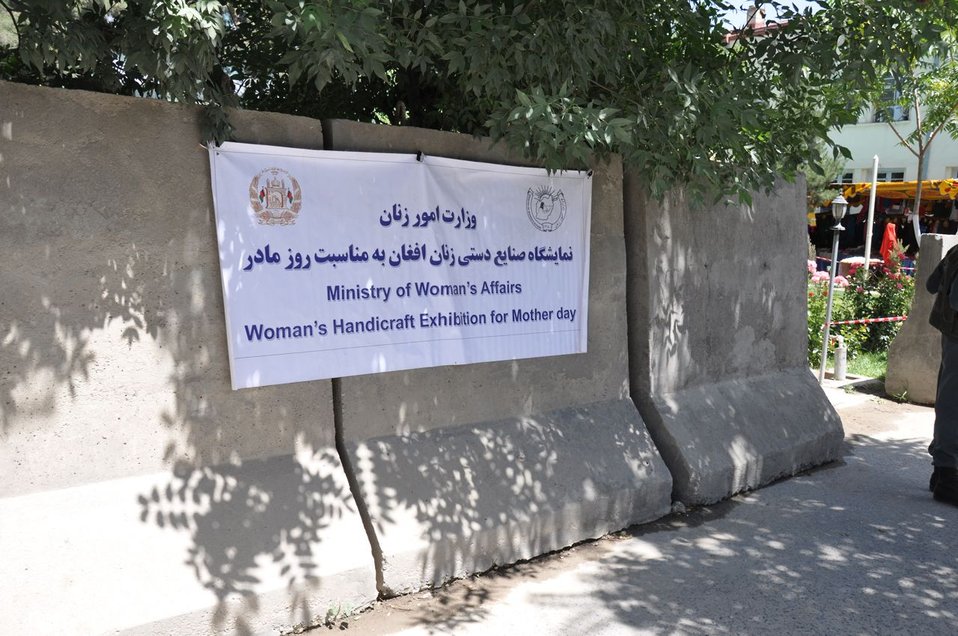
Mother's Day in Afghanistan